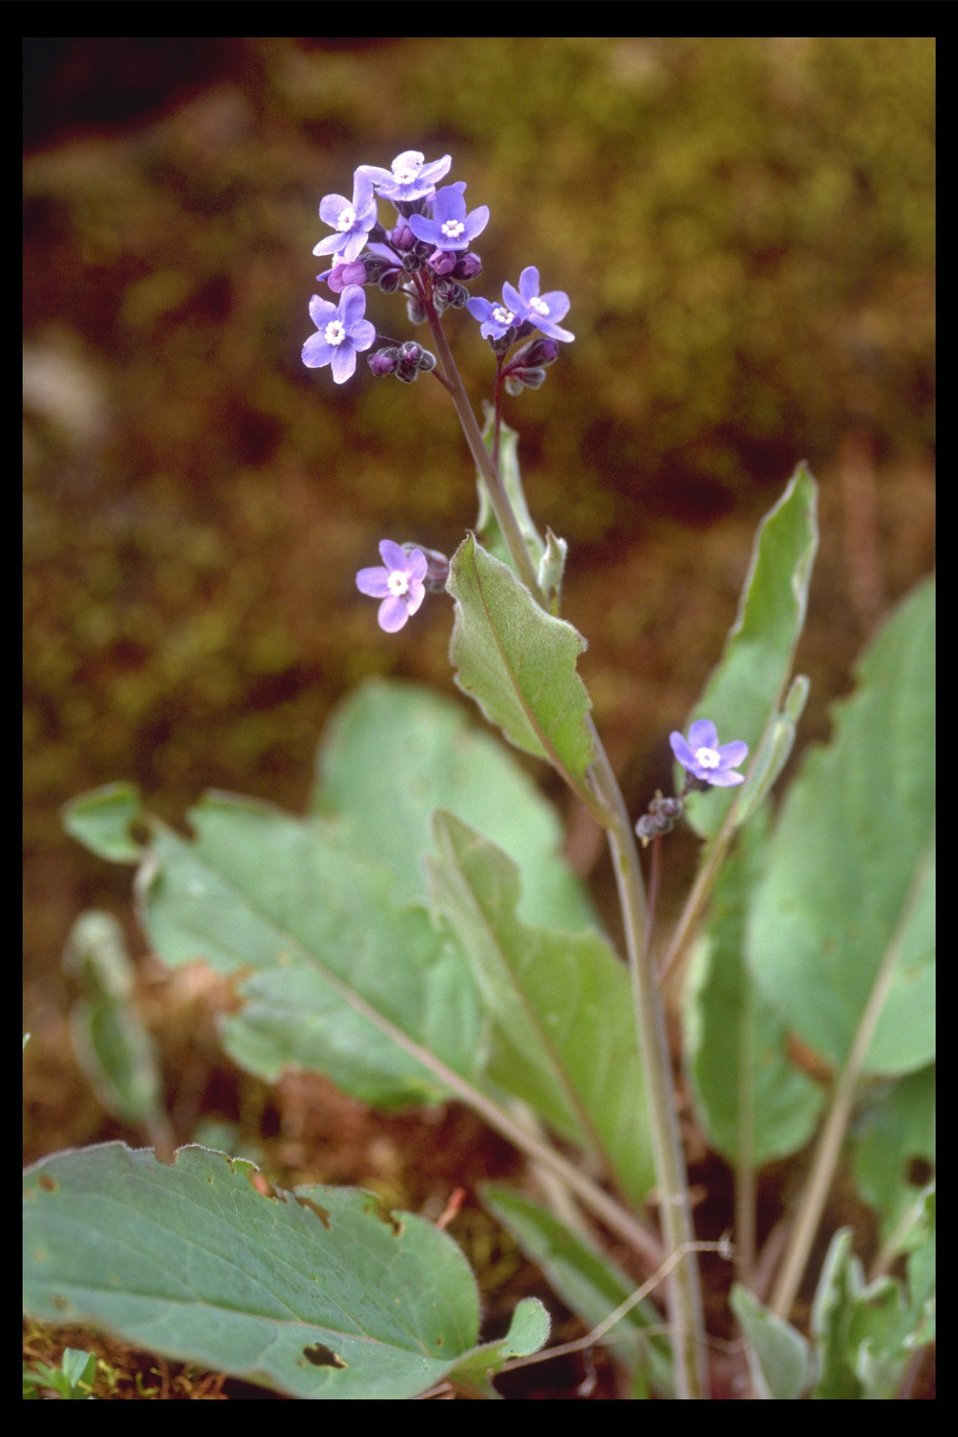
Close up of Grand Hound's Tongue (Cynoglossum grande) in the Upper Table Rock area.